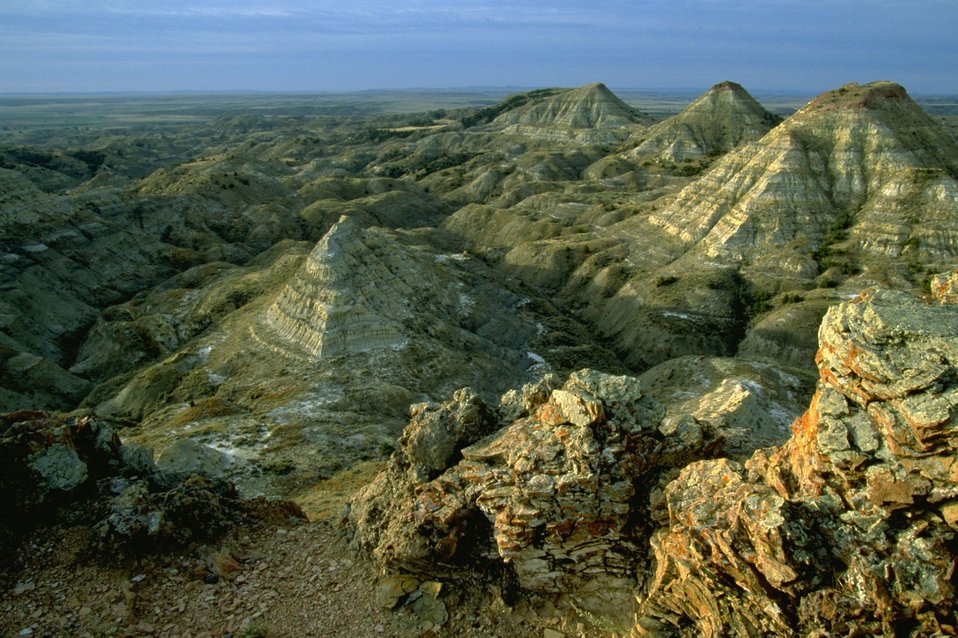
Picturesque view of the Terry Badlands